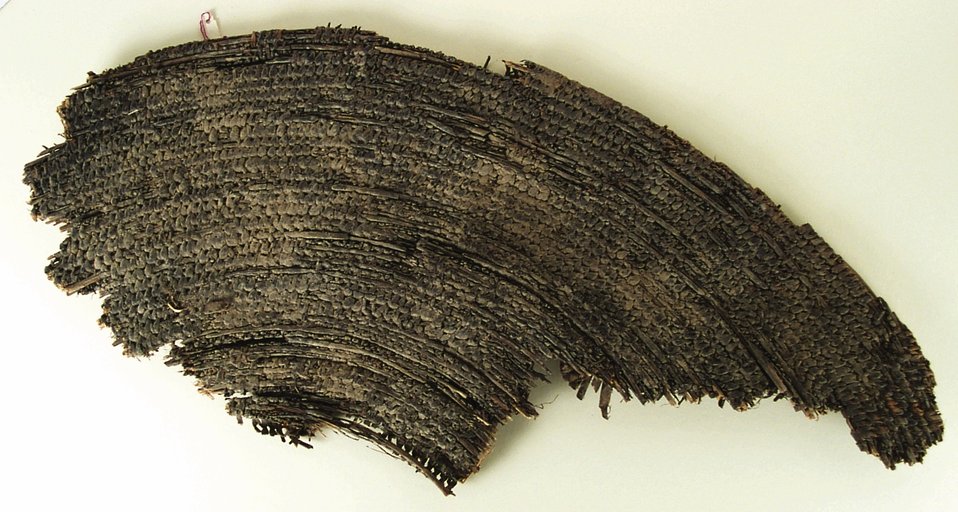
Basketry fragment 410mm